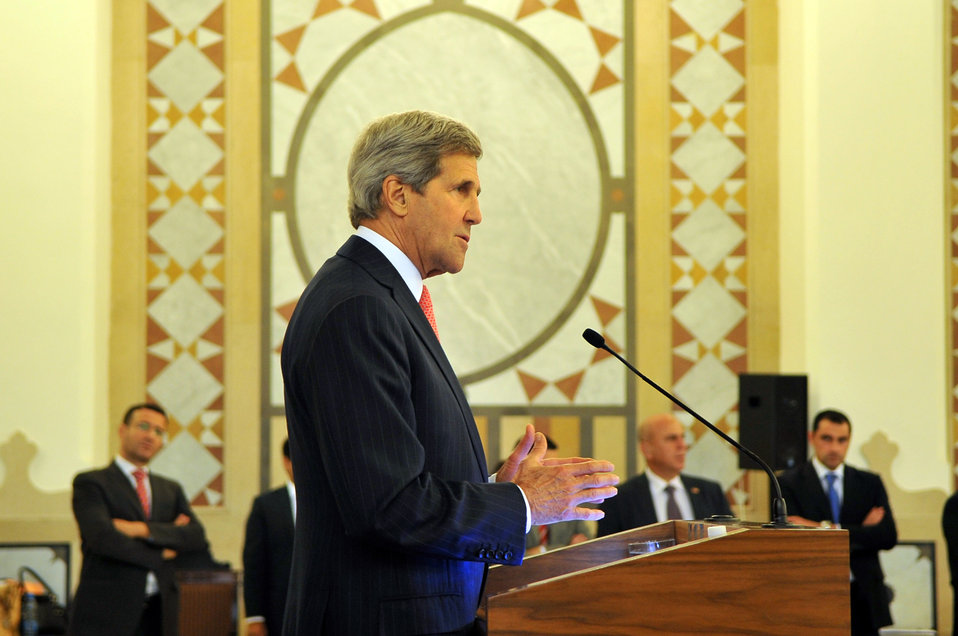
Secretary Kerry Addresses Reporters After Meeting With Lebanese Prime Minister Salam

U.S. Secretary of State John Kerry holds a news conference after meeting with Lebanese Prime Minister Tammam Salam in Beirut, Lebanon, on June 4, 2014.